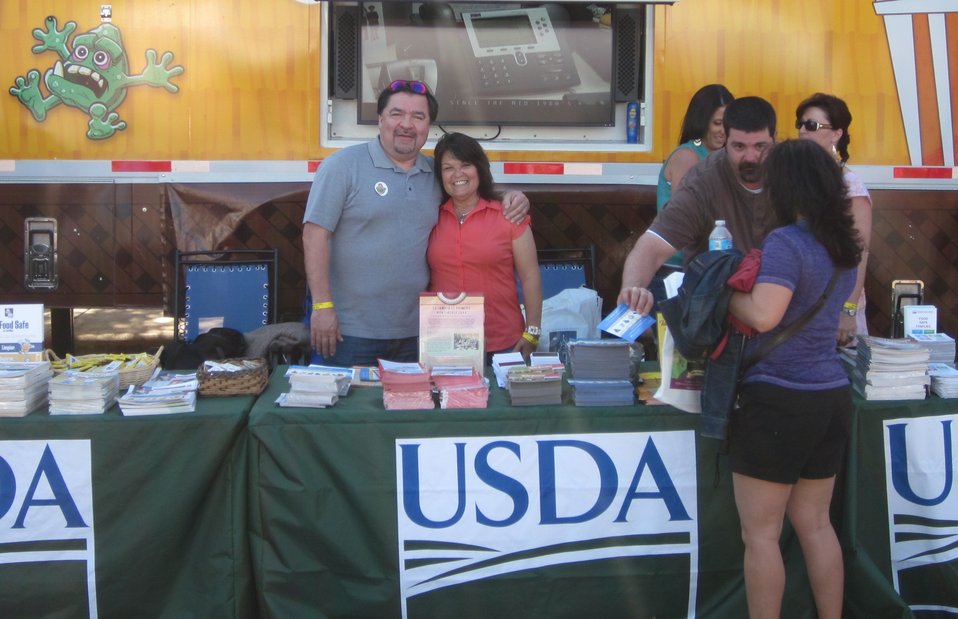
FSDZ Al Almanza at Oyster Bake

U.S. Department of Agriculture’s (USDA) Food Safety and Inspection Service (FSIS) Administrator Al Almanza and Food Safety Discovery Zone Project Manager Mary Harris pose for a photo outside the USDA exhibit at the Fiesta Oyster Bake on St. Mary’s University campus in San Antonio, TX on April 21, 2012. SIS Administrator Al Almanza and Food Safety Discovery Zone Project Manager Mary Harris pose for a photo outside the exhibit at the Fiesta Oyster Bake on St. Mary’s University campus in San Antonio. The FSIS Food Safety Discover Zone was in San Antonio, Texas April 20-21, 2012.